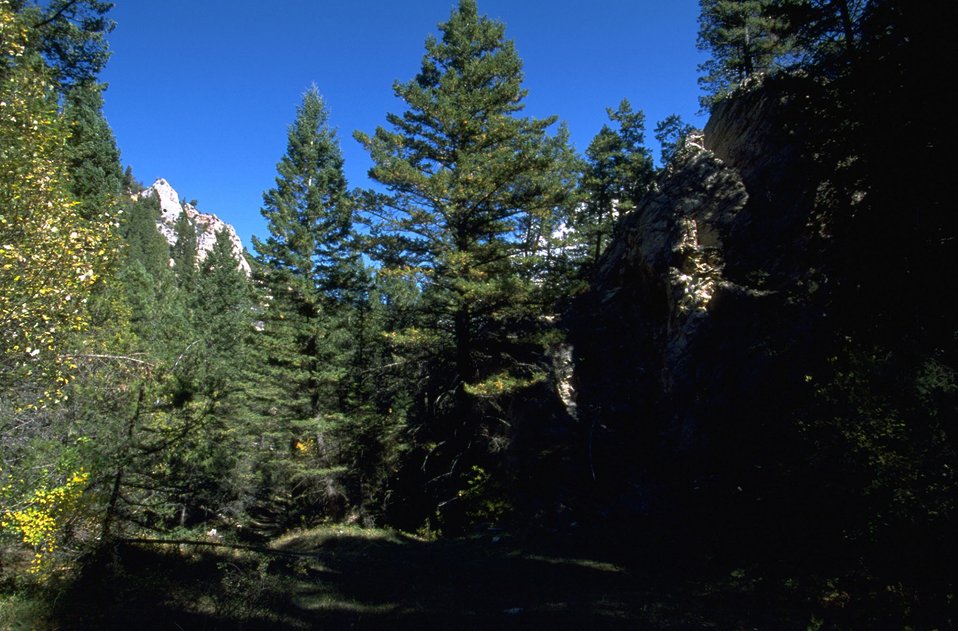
Rock outcrop in the forest